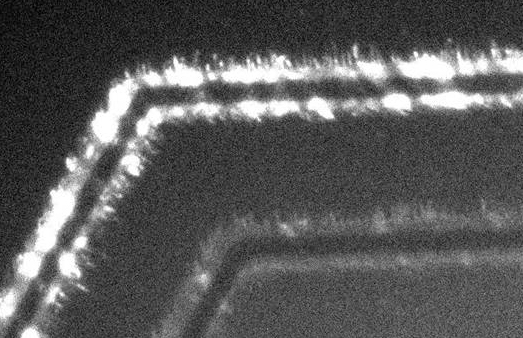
Nanowires

Optical microscope image of nano LEDs emitting light.